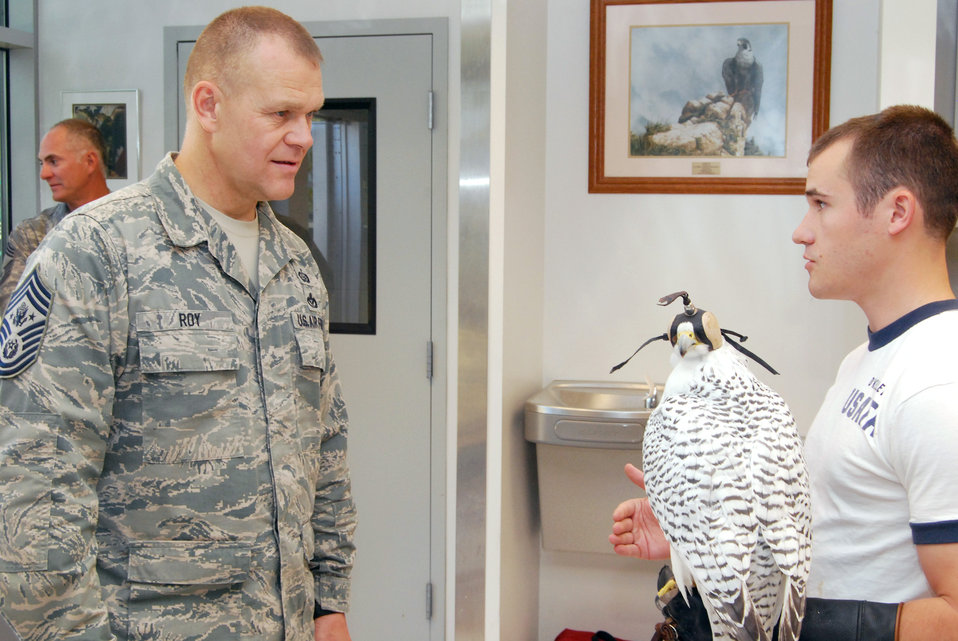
Top chief meets with enlisted Airmen, future officers

Cadet 2nd Class Michael O'Kelley (right) talks to Chief Master Sgt. of the Air Force James A. Roy about the U.S. Air Force Academy's falconry program during a visit to the Academy.